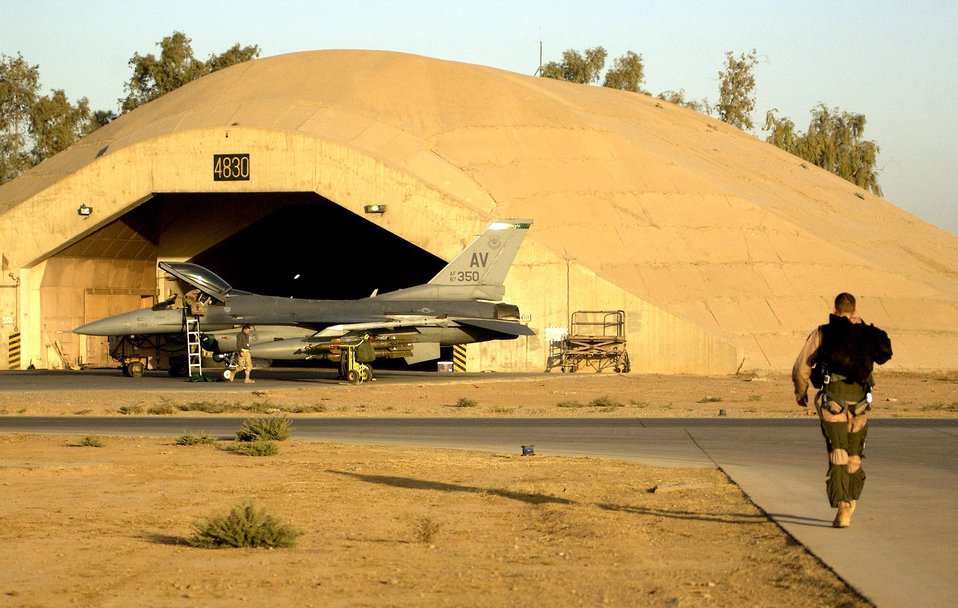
The beat goes on

BALAD AIR BASE, Iraq (AFPN) -- Capt. Bart Wilbanks walks to his F-16 Fighting Falcon as maintainers prepare it for an early morning close-air support mission over Mosul, Iraq. Captain Wilbanks is from Waco, Texas, and deployed to this base from the 555th Fighter Squadron, Aviano Air Base, Italy.